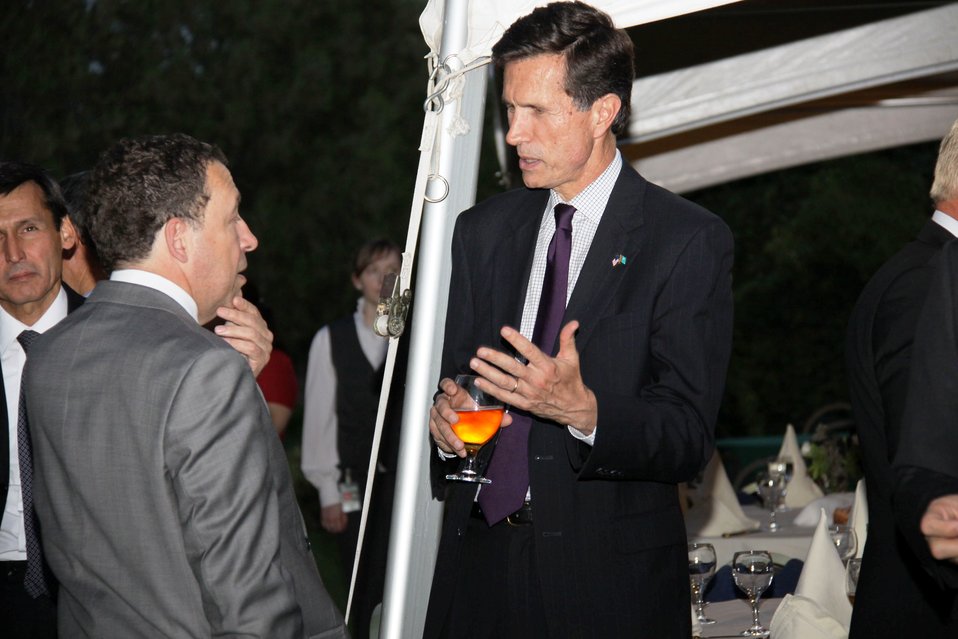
Assistant Secretary Blake Drinks Fire Water and Speaks With Former Ambassador Mann

U.S. Assistant Secretary of State for South and Central Asian Affairs Robert O. Blake, with Turkmenistan's Foreign Minister Rashid Meredov on his left, speaks with former U.S. Ambassador to Turkmenistan Steven Mann at the reception following the Annual Bilateral Consulations (ABCs) between the Government of Turkmenistan and the Government of the United States on June 15, 2010, in Ashgabat, Turkmenistan.